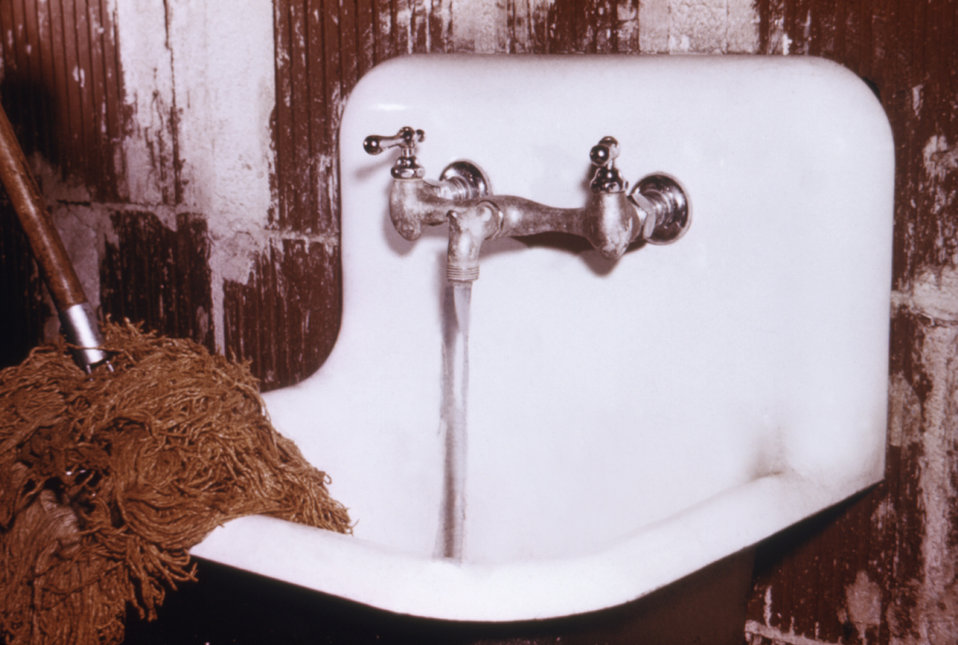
The placement of the water faucet above the water spill rim of this mop sink is an example of proper sanitary practice.